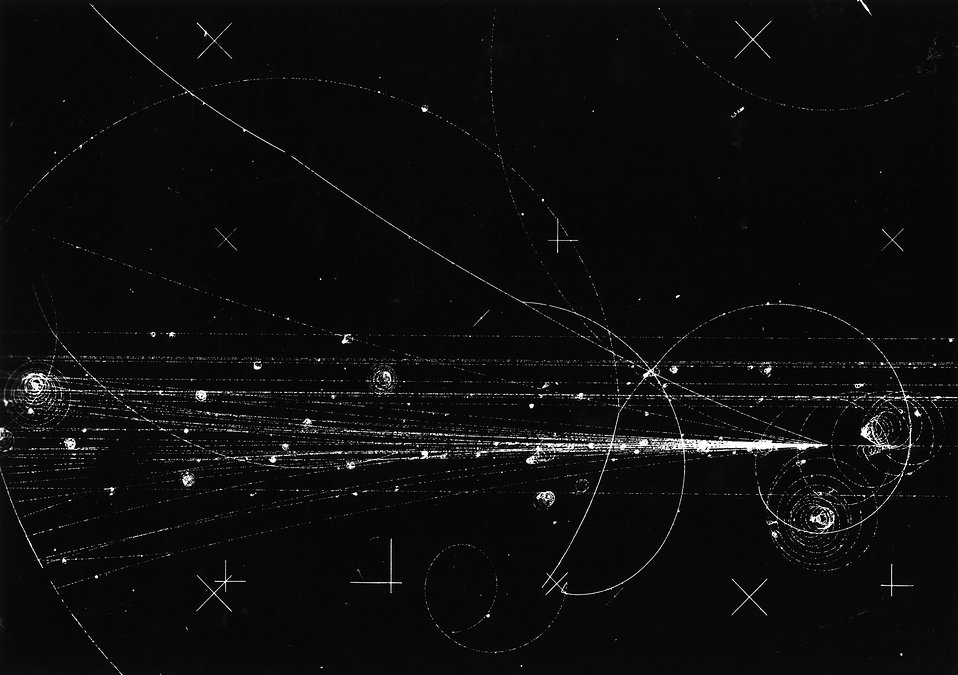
Proton with 300 GeV energy producing 26 charged particles in the 30 inch hydrogen bubble chamber at FERMILAB.
c.1973